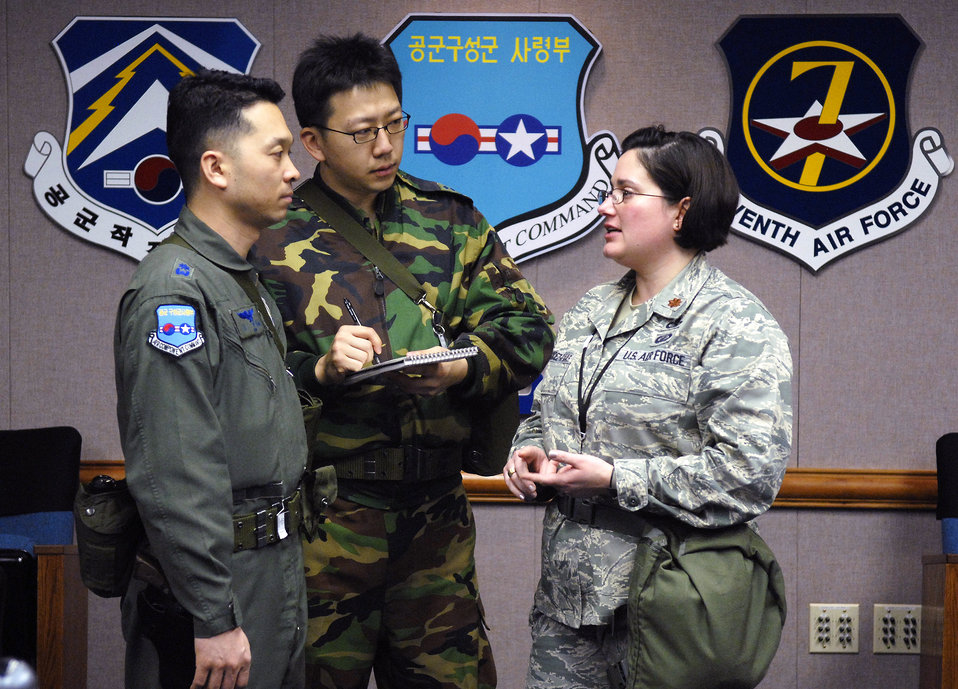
Osan exercise optimizes communication between forces

Maj. Miralba Fernandez-Covas works closely with South Korean air force officers Maj. Kim Heonjoong and 1st Lt. Cho Sungmin during Exercise Key Resolve/Foal Eagle March 17 at Osan Air Base, South Korea. The three officers are from the Air Component Command's joint plans and coordination section.